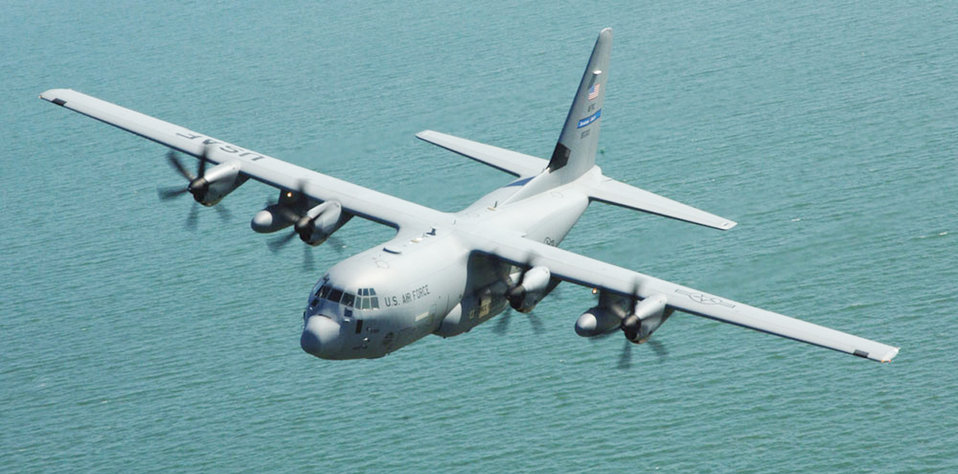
Hurricane Hunters Ready for 2007 Season

The 53rd Weather Reconnaissance Squadron